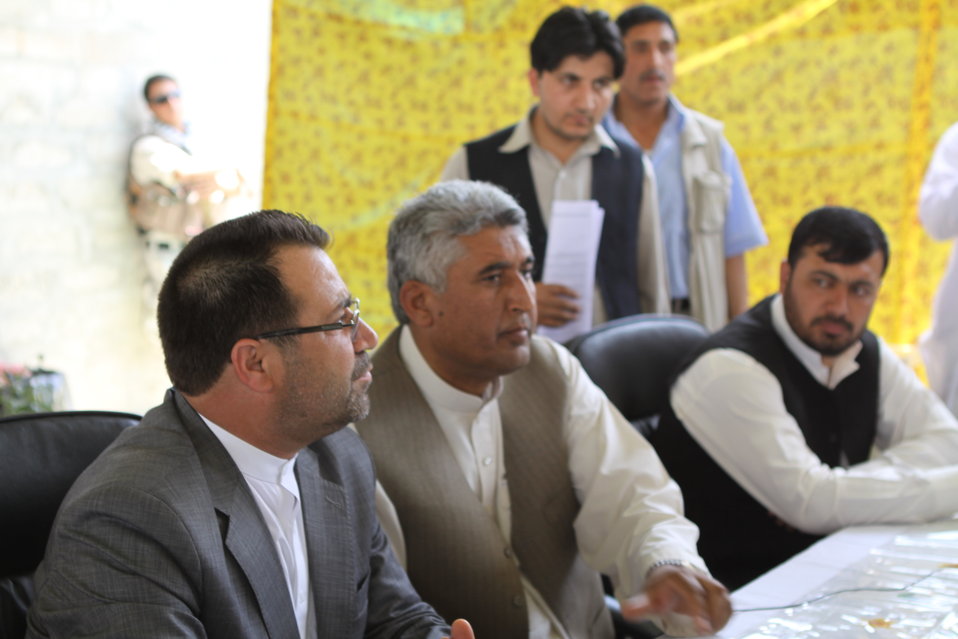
Bolan Poultry Farm